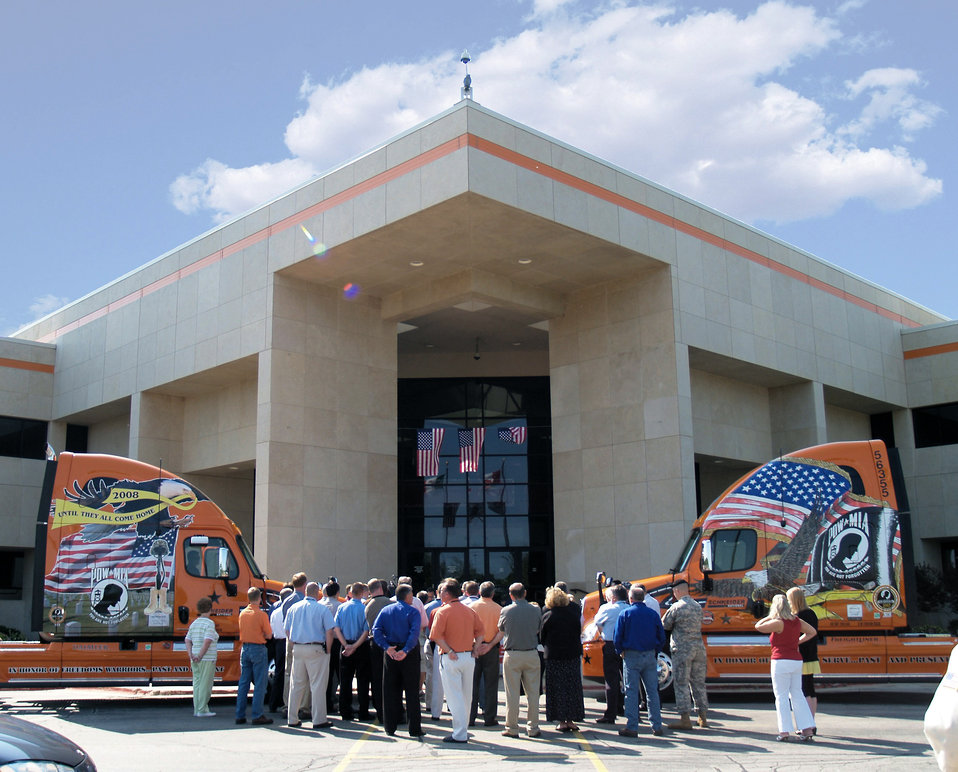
New program gives vets advantage in owning a business

Employees of Schneider National, Inc., a trucking company headquartered in Green Bay, Wis., stand outside the headquarters July 1 for a ceremony marking the signing of a memorandum of understanding between Schneider and the Department of Veterans Affairs.